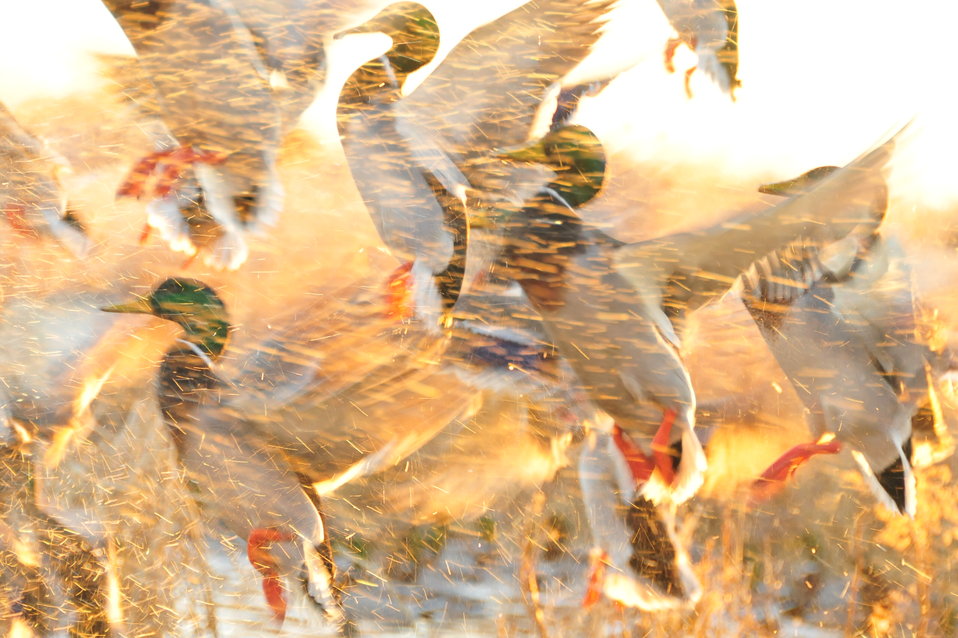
Mallard Drakes Take Flight

A group of mallard drakes take flight at sunrise, with the backlit spray from their wings.